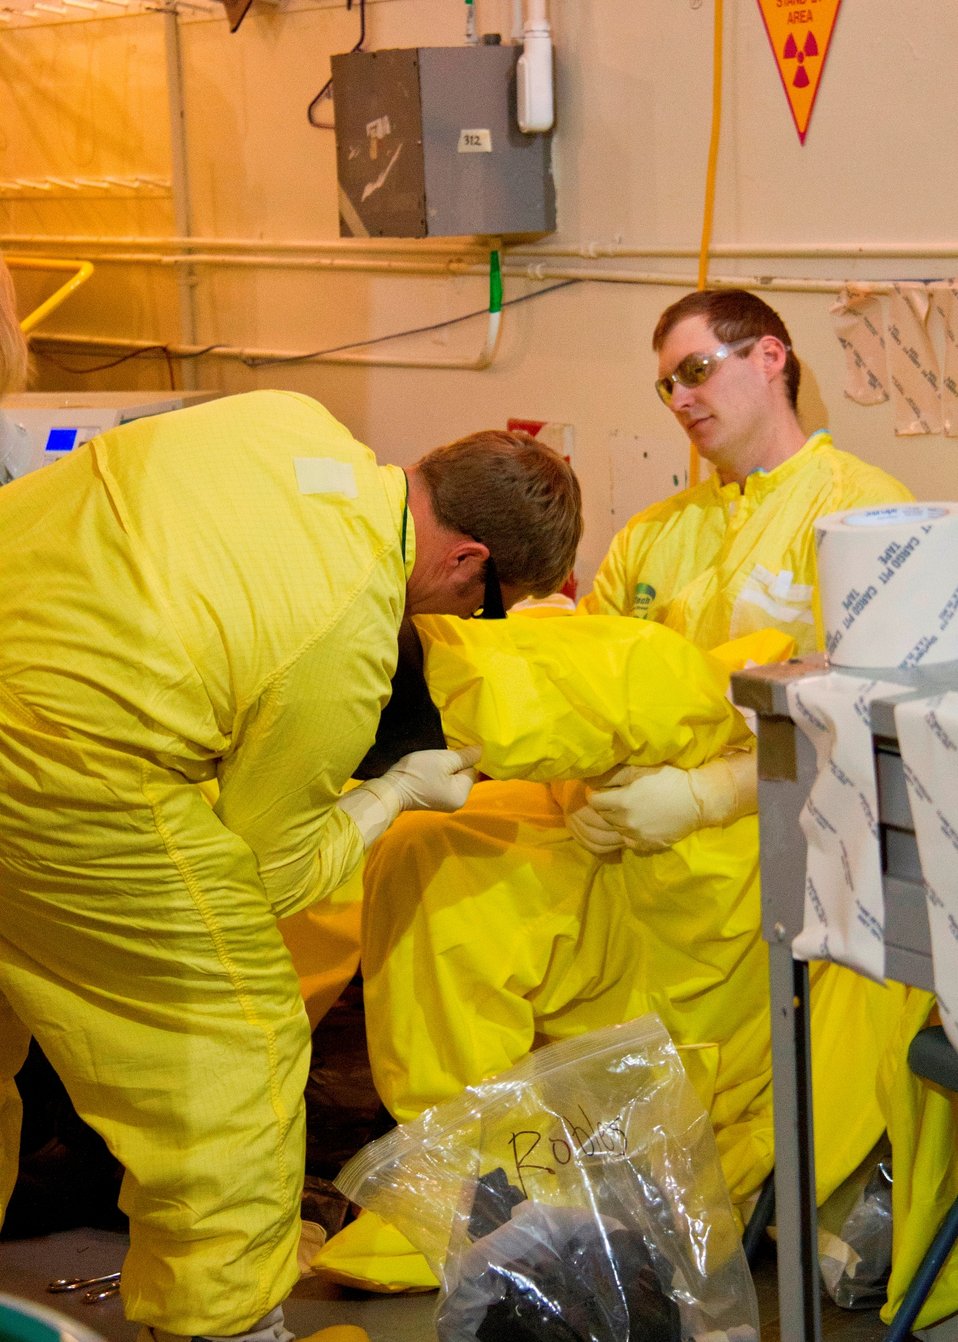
hydro-fluoride scrubber cell

Cleanup work at the Hanford, Richland site